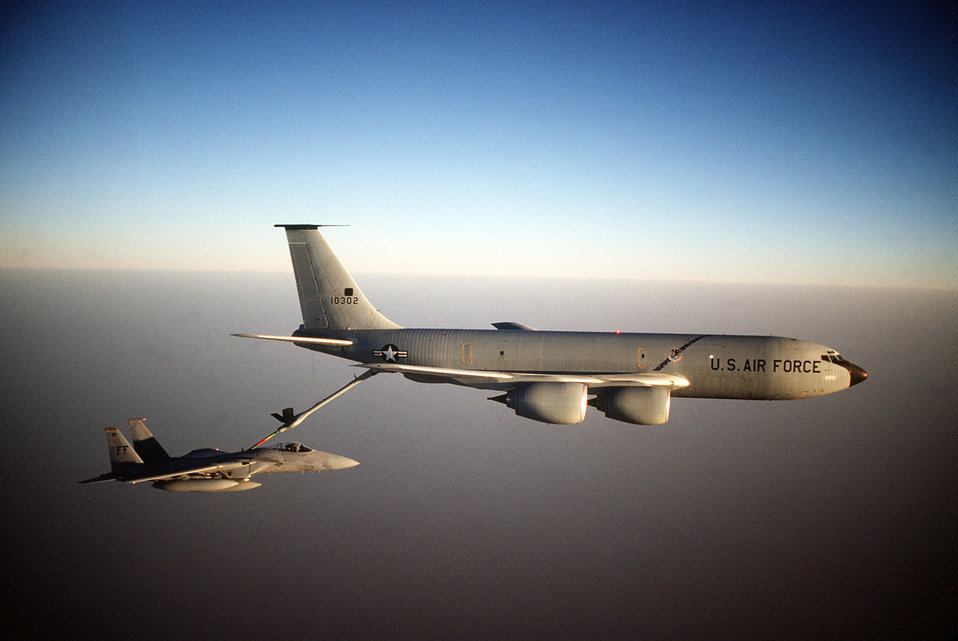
F-15C Eagle

1990's -- A 1st Tactical Fighter Wing F-15C Eagle aircraft refuels from a KC-135R Stratotanker aircraft while on a combat patrol near the Iraqi border during Operation Desert Shield.